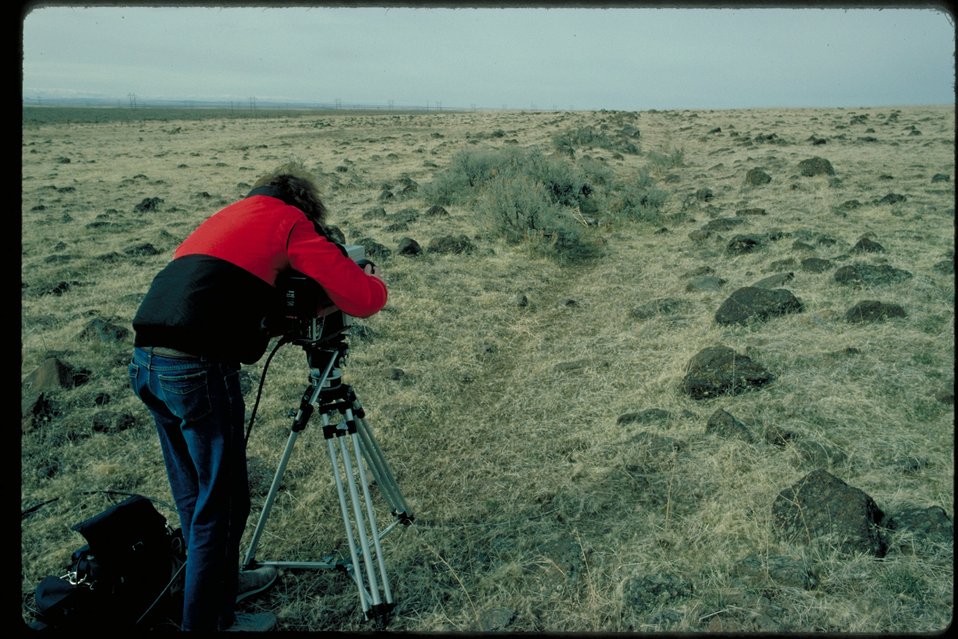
Oregon Trail North of Canyon Creek Lower Snake River District